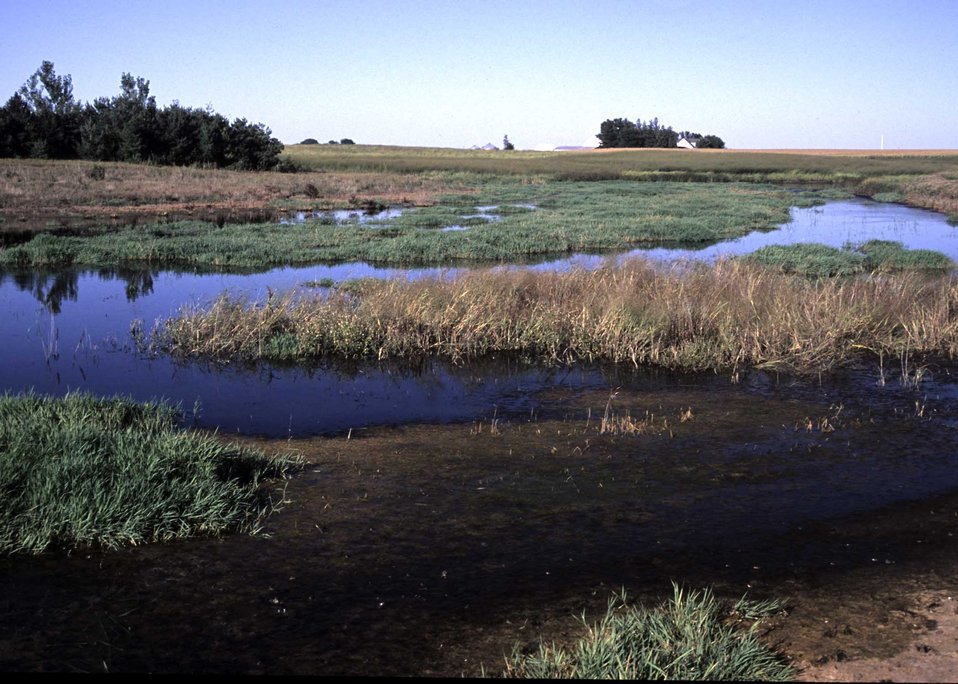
A restored wetland through the CREP program in Calhoun County, Iowa.